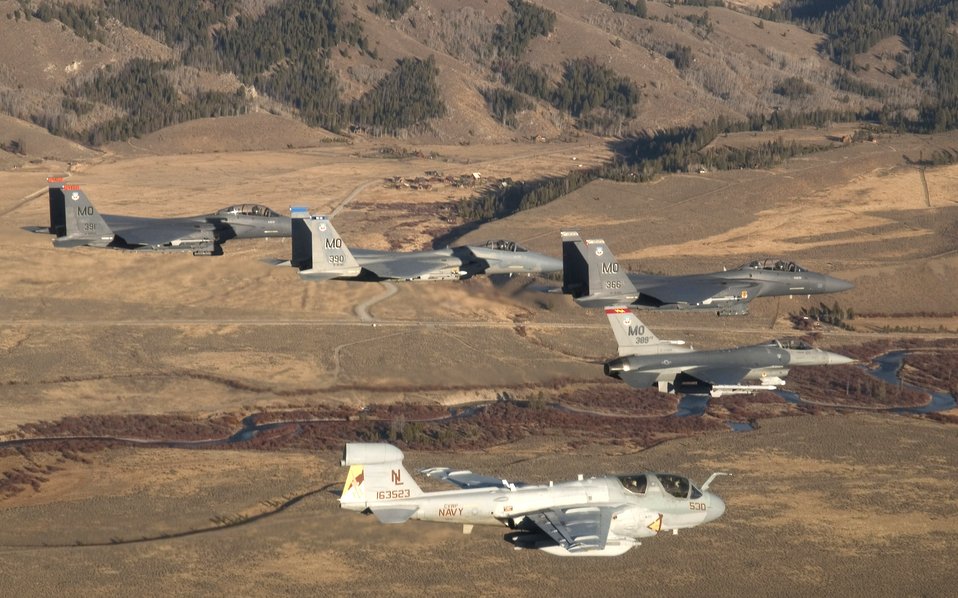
Flying over Idaho

A five-ship formation flies over the Idaho Sawtooth Mountains Nov. 1. Col. Anthony Rock, 366th Fighter Wing commander, led the formation of two F-15E Strike Eagles, and F-15 Eagle, an F-16 Fighting Falcon, all from the 366th FW at Mountain Home Air Force Base, Idaho, and an EA-6B Prowler from the 388th Electronic Control Squadron at Naval Air Station Whidbey Island, Wash. The 366th FW began the first phase of its F-16 drawdown when five jets departed the base Nov. 2. The departure is part of the wing's realignment.